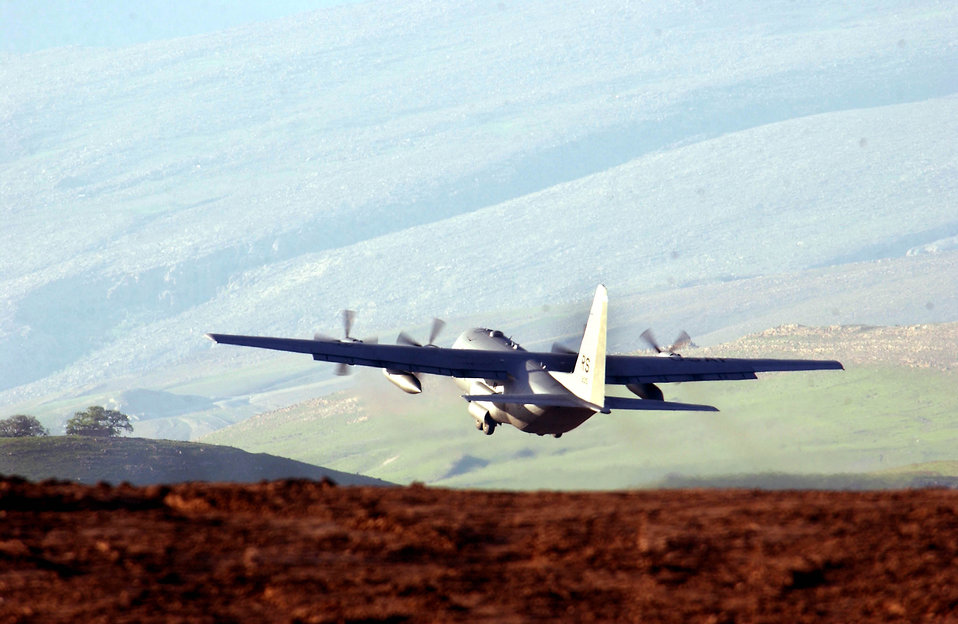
Hercules lifts off

OPERATION IRAQI FREEDOM -- A Ramstein C-130 Hercules takes off from Bashar Airfield in Northern Iraq after landing there to off load supplies to the troops deployed there in support of Operation Iraq Freedoom.